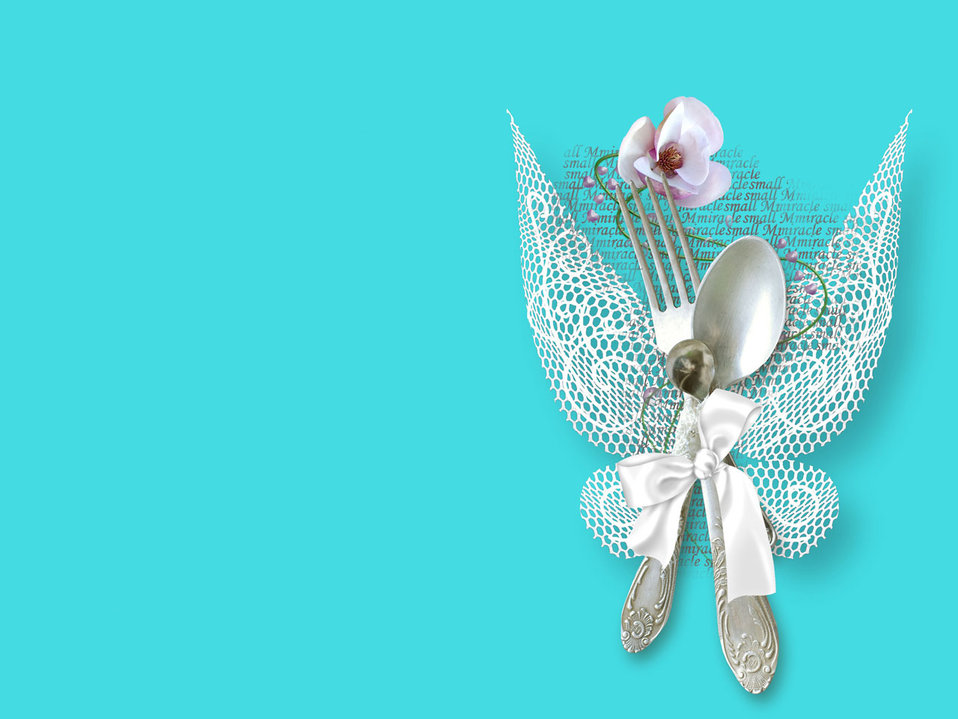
Silverware

Cutlery for wedding.